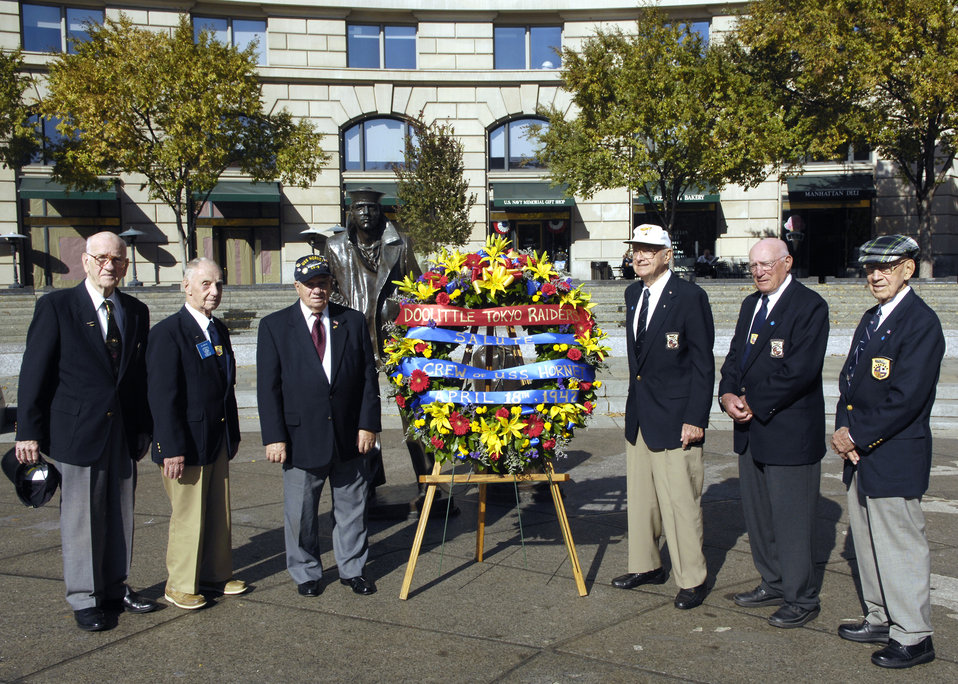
Doolittle Raiders visit Washington Airmen, memorials

Six members of the Doolittle Raiders attend the wreath laying ceremony in honor of the USS Hornet at the Navy Memorial in Washington Nov. 9. On April 18, 1942, the Doolittle Raiders, led by then Lt. Col. Jimmy Doolittle, became the first to bombard Japan since the attack on Pearl Harbor. The Doolittle Raiders have celebrated their victory for the past 64 years.